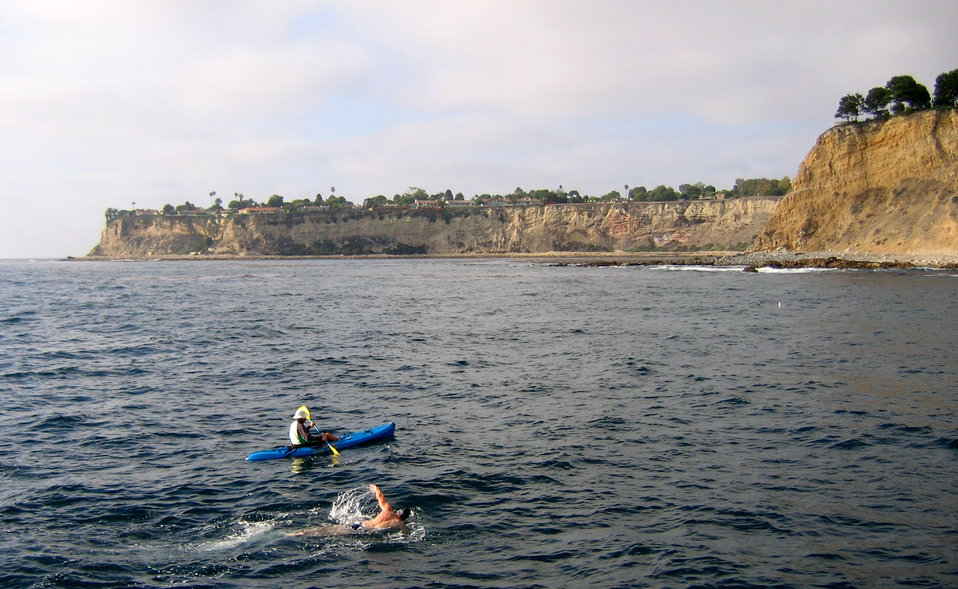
Professor swims into record book ... again

Lt. Col. Tim Lawrence, accompanied by a kayaker to assist with visibility approaching the shoreline, heads into the homestretch of the Santa Barbara Island-to-Los Angeles, Calif., channel swim Aug. 1. Colonel Lawrence is an astronautical engineering professor at the U.S. Air Force Academy.